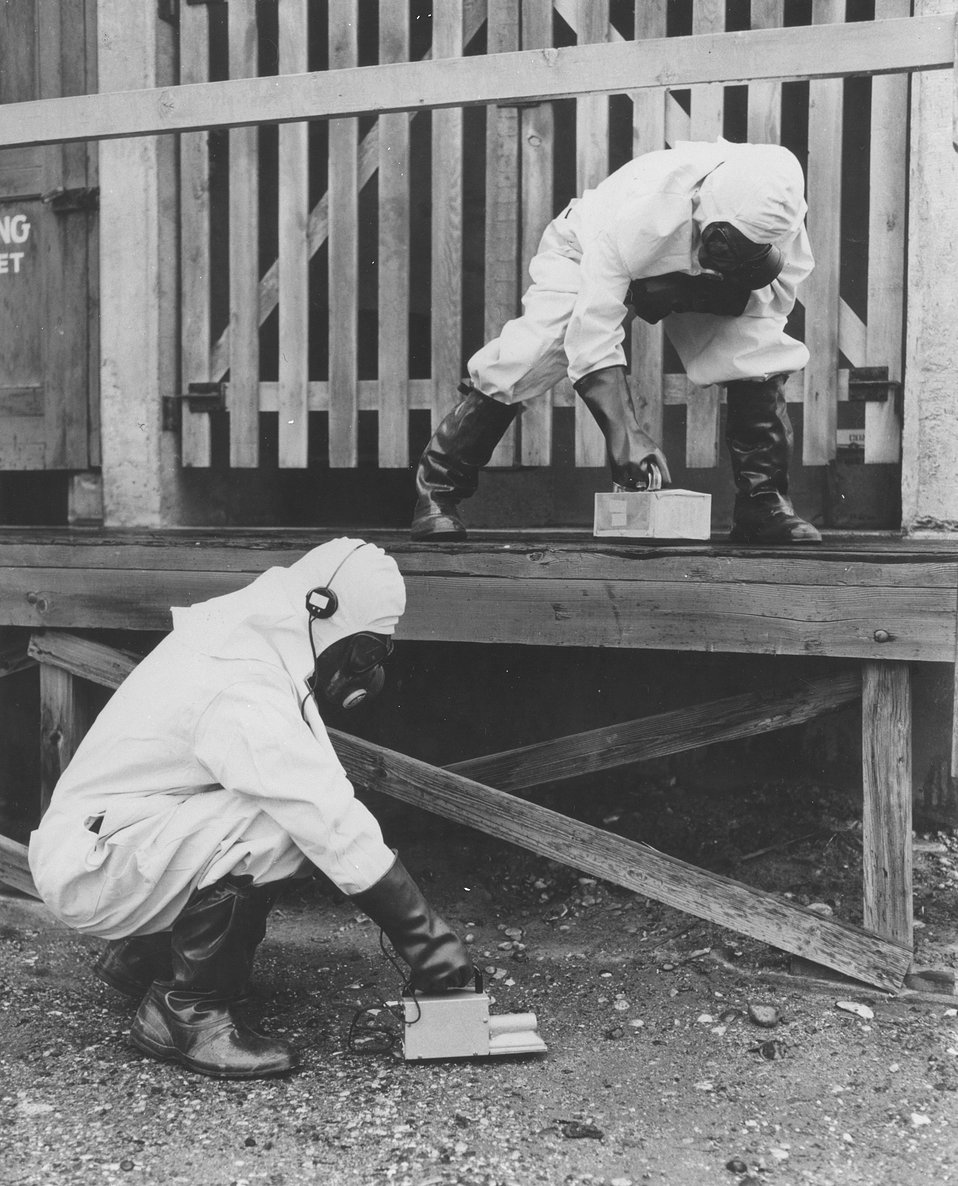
Emergency Radiation Team members from AEC's Hanford Works demonstrate that they are prepared to measure high or low level radioactive contamination should it get out of the hundreds of users of radioactive isotopes in Washington, Oregon and Alaska. c. 1958